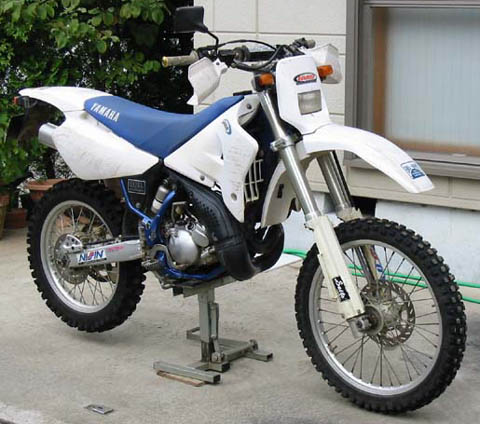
Yamaha DT200R